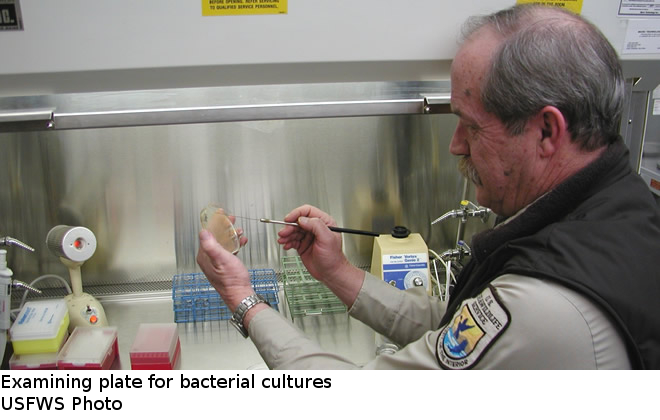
Examining plate for bacterial cultures - Abernathy Fish Technology Center